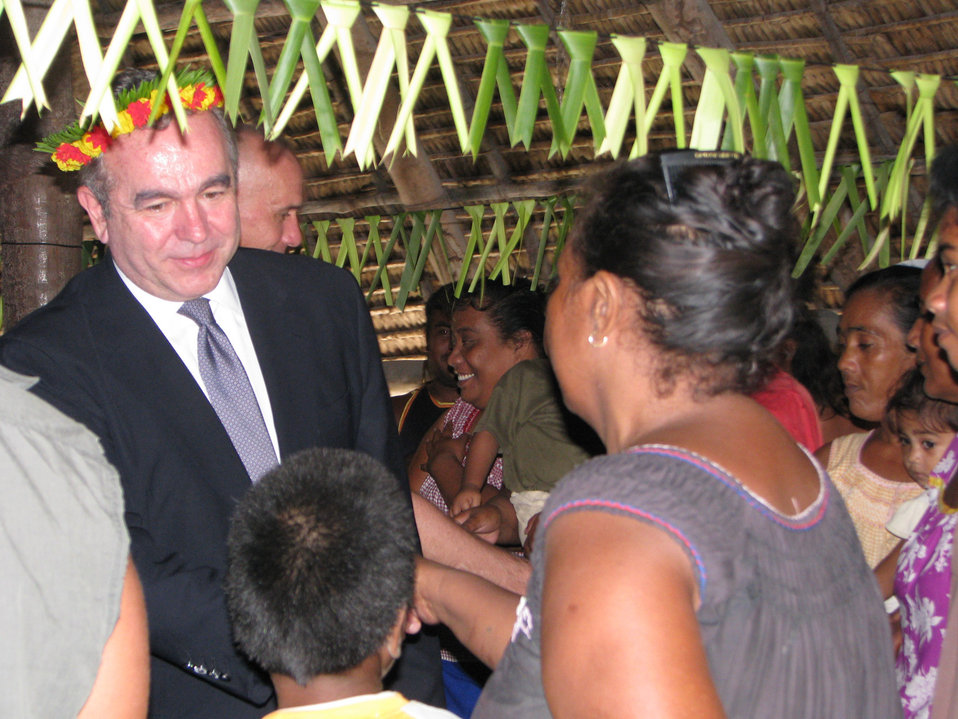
Assistant Secretary Campbell Shakes Hands With Local Residents

Assistant Secretary for East Asian and Pacific Affairs Kurt Campbell shakes hands with local residents prior to a wreath laying ceremony at the Battle of Tarawa Memorial in Kiribati on June 27, 2011. Assistant Secretary Campbell is leading a U.S. delegation set to visit nations throughout the South Pacific that also includes Adm. Patrick Walsh, commander of U.S. Pacific Fleet, Office of the Secretary of Defense South/Southeast Asia Principal Director Brig. Gen. Richard Simcock, and U.S. Agency for International Development (USAID) Assistant Administrator Nisha Biswal. Kiribati is the first stop on the trip.